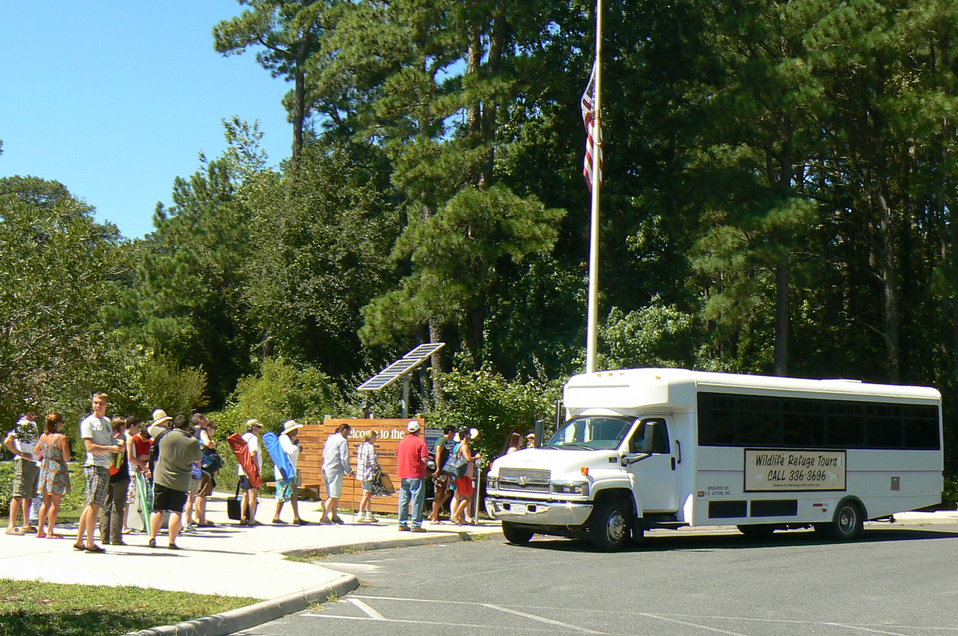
Getting a Ride to the Beach

The Chincoteague Natural History Association is using its 30-passenger tour bus to provide shuttle service to refuge visitors. Michael Dixon/USFWS